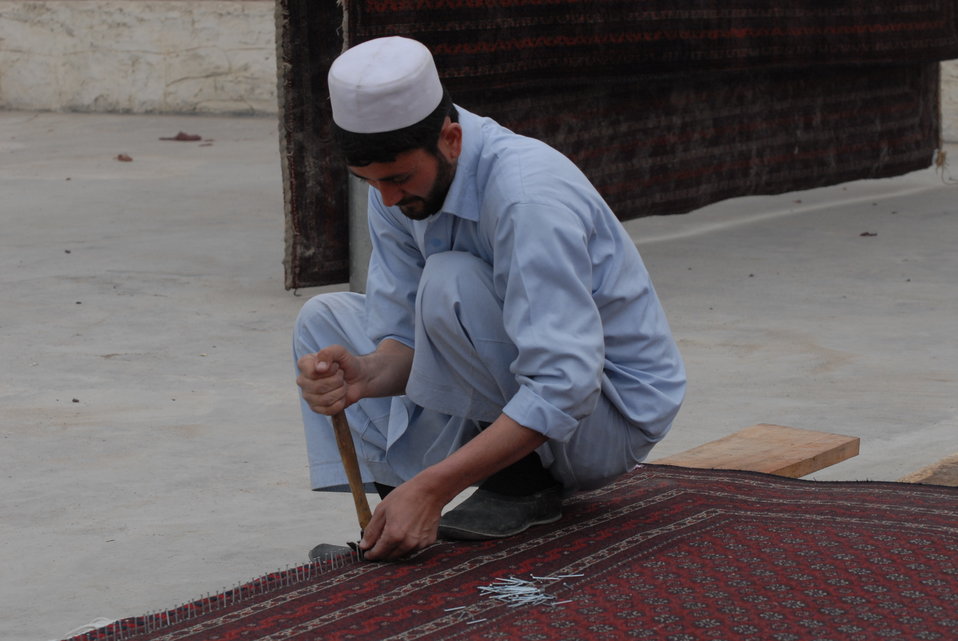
'On the Road' in Nangarhar Province